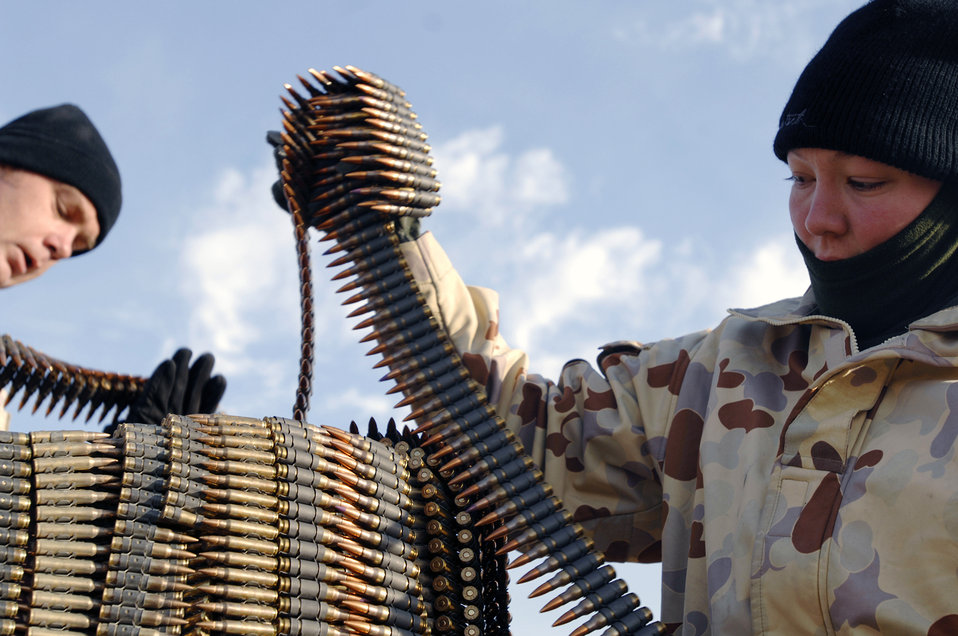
U.S. Air Force, Australian EOD have a blast

Australian Army Lance Cpls. John Bamford (left) and Natalie Pinoer place ammunition in burn bins to be destroyed during a controlled detonation Jan. 18 in Southwest Asia. The Australians worked with U.S. Air Force members from the 386th Expeditionary Civil Engineer Squadron explosive ordnance disposal flight to destroy unserviceable munitions. The corporals are with the Australian Army Force Level Logistic Asset unit.